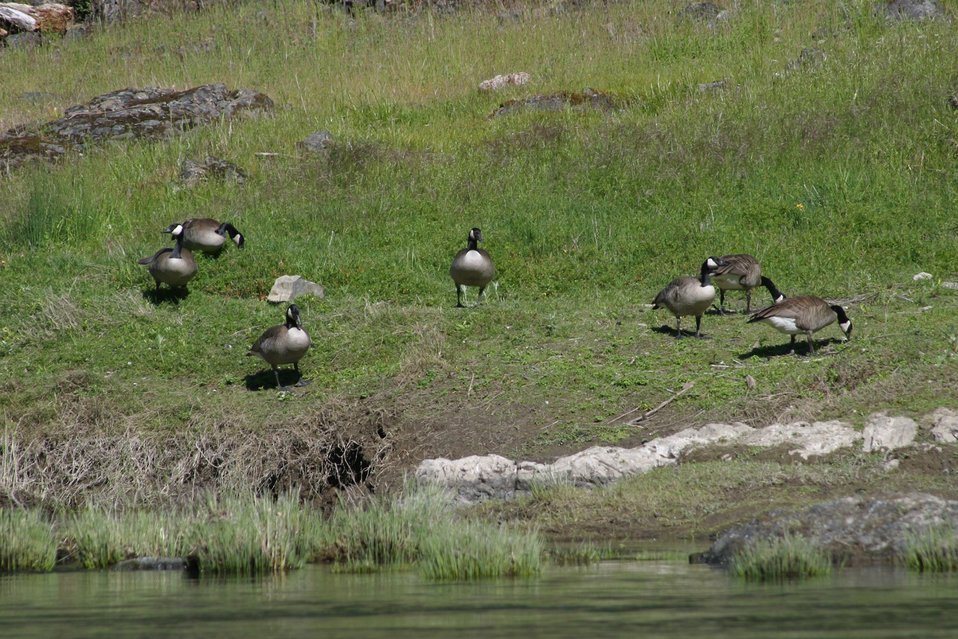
Wild section of the Rogue River from Grave Creek to Foster Bar May 19 to May 22.